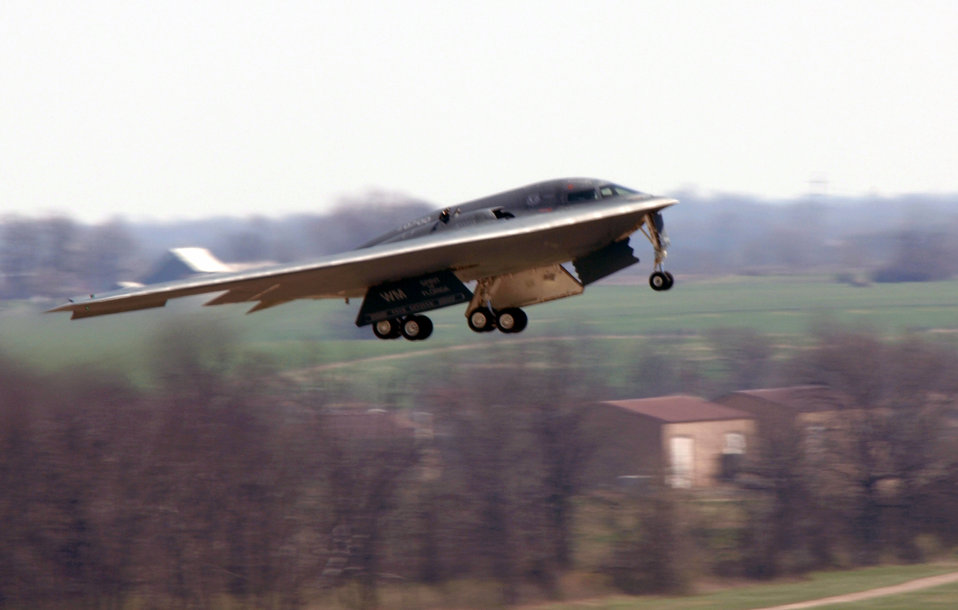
B-2s return to flight after safety pause

Col. Tom Bussiere and Maj. Rich Collins take off in a B-2 Spirit named the Spirit of Florida April 15 at Whiteman Air Force Base, Mo. The flight was the first since a B-2 crashed Feb. 23 at Andersen AFB, Guam. Colonel Bussiere is the 509th Operations Group commander, and Major Collins is the 394th Combat Training Squadron operations officer.